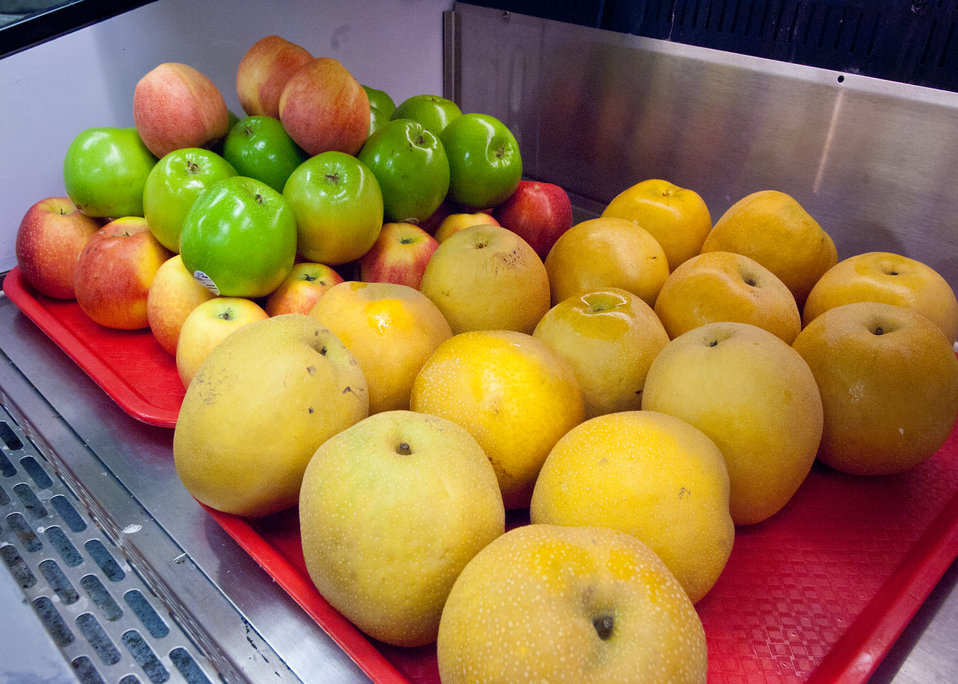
Fresh apples and Asian pears for the National School, Breakfast Program, for students at Washington-Lee High School in Arlington, Virginia, on Wednesday, October 19, 2011. The School Breakfast Program a federally assisted meal program administered by the United States Department of Agriculture, Food and Nutrition Service provides cash assistance to States to operate nonprofit breakfast programs in public, nonprofit private schools and residential child care institutions. The program is administered at the Federal level by USDA, FNS. State education agencies administer the SBP at the State level, and local school food authorities operate it in schools.